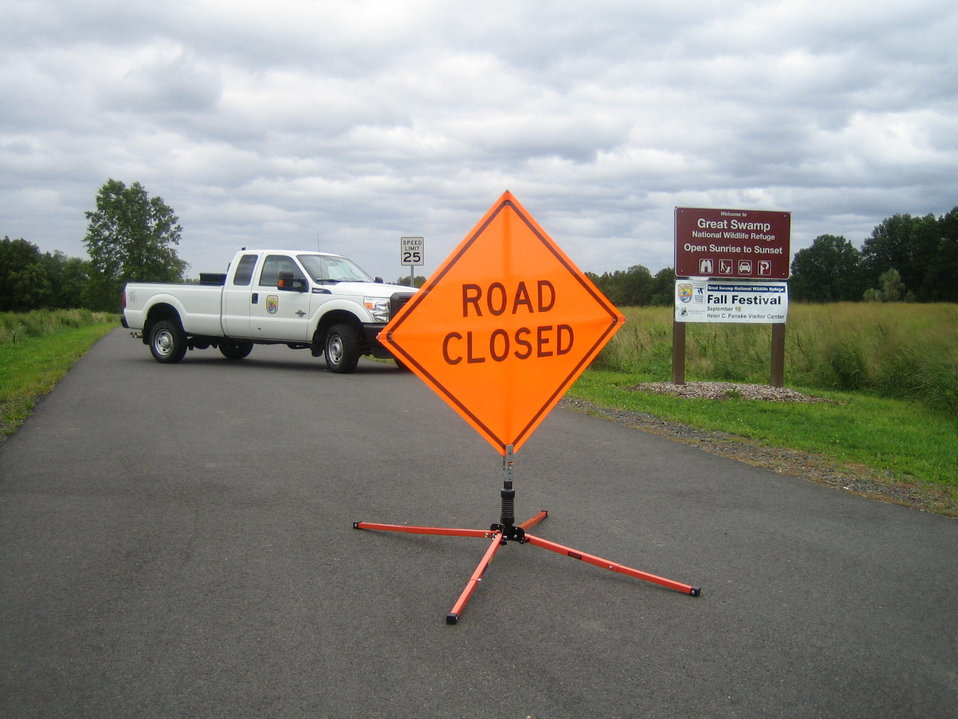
Road closed at Great Swamp

Road closed due to damage from Hurricane Irene at Great Swamp National Wildlife Refuge in New Jersey.